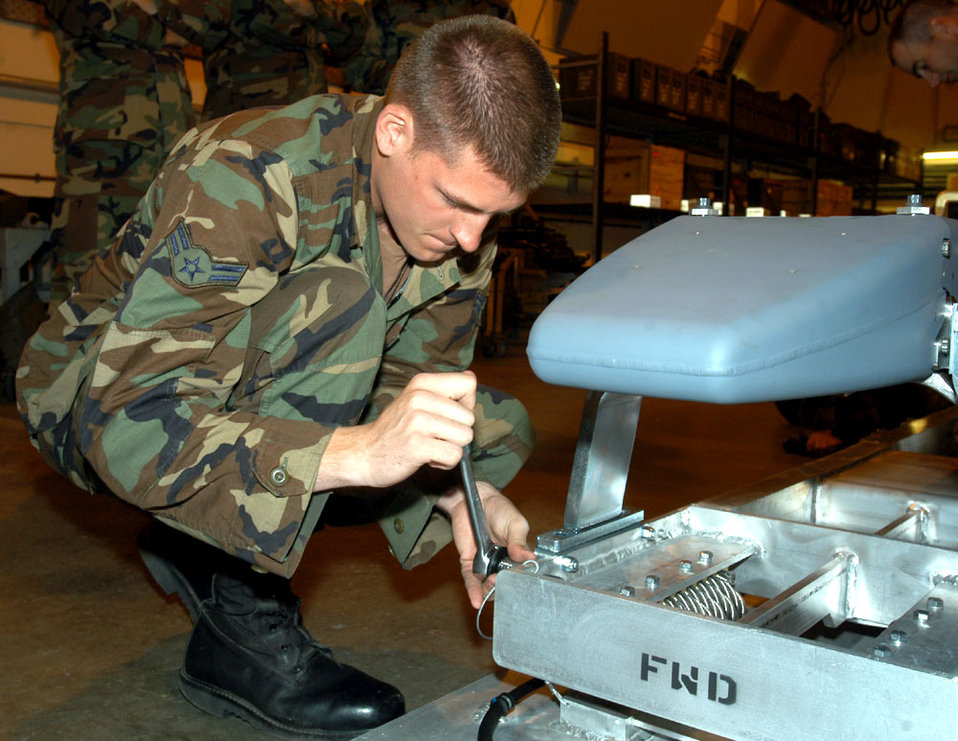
Airmen train on new small-diameter munition

Airman 1st Class Mark Sturtevant trains on the new munitions release unit at Royal Air Force Lakenheath, England. This is the first time Airmen conducted operational training on the munition for their scheduled deployment in September. Airman Sturtevant is assigned to the 48th Munitions Squadron.